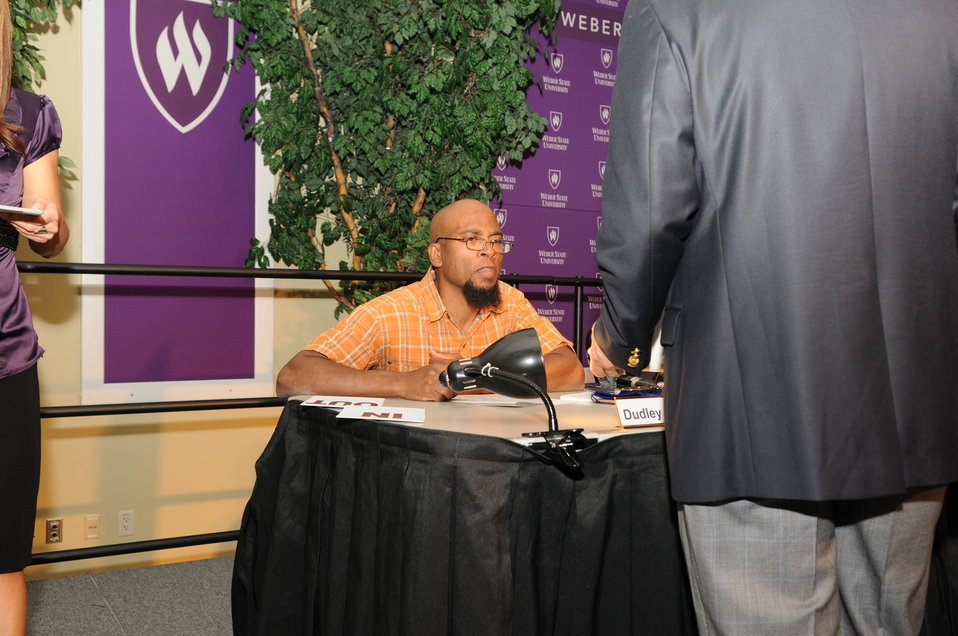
Judging

The U.S. Fish & Wildlife Service sponsored the 2012 Federal Duck Stamp Art Contest September 28 and 29 in Ogden, Utah, at Weber State University. A panel of five judges was responsible for choosing the art work used to design the 2013-2014 Migratory Bird Hunting and Conservation Stamp.